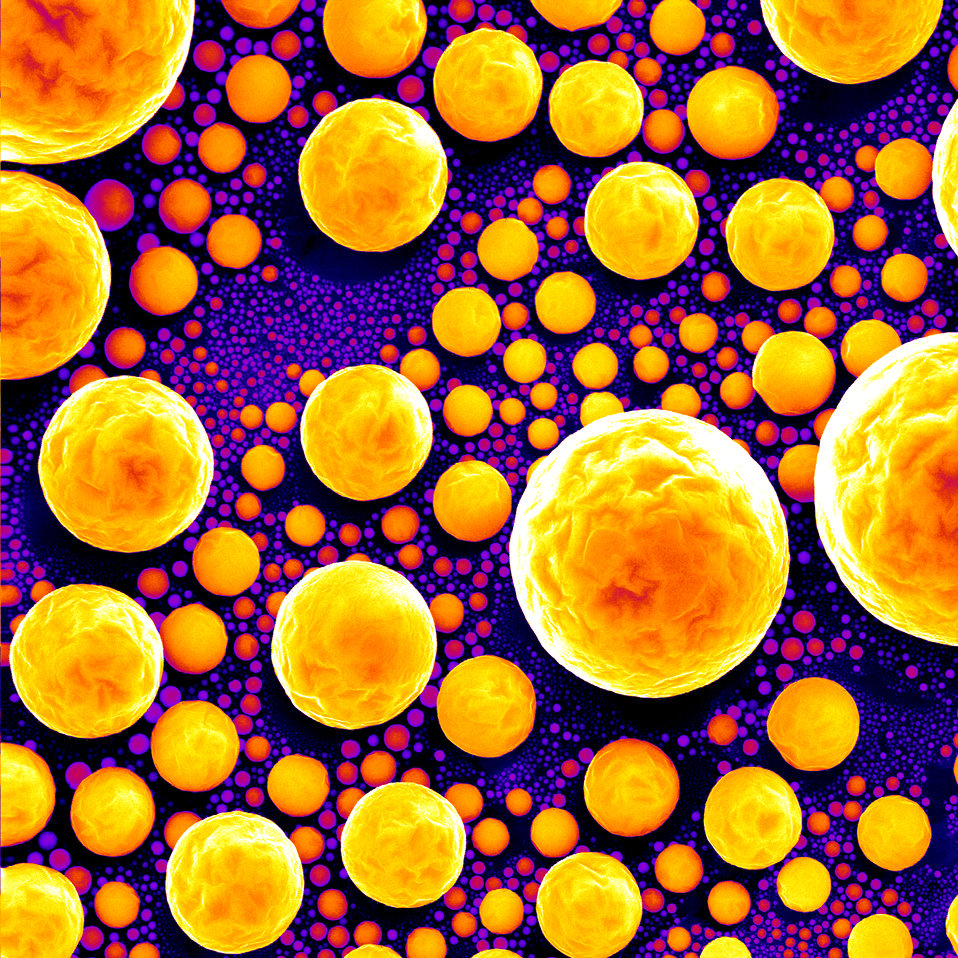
Tin Spheres

The colorized micrograph above is a scanning electron micrograph of tin spheres. The micrograph was obtained using a system developed by NIST and two industrial partners that substantially increases the detail provided in SEM images.